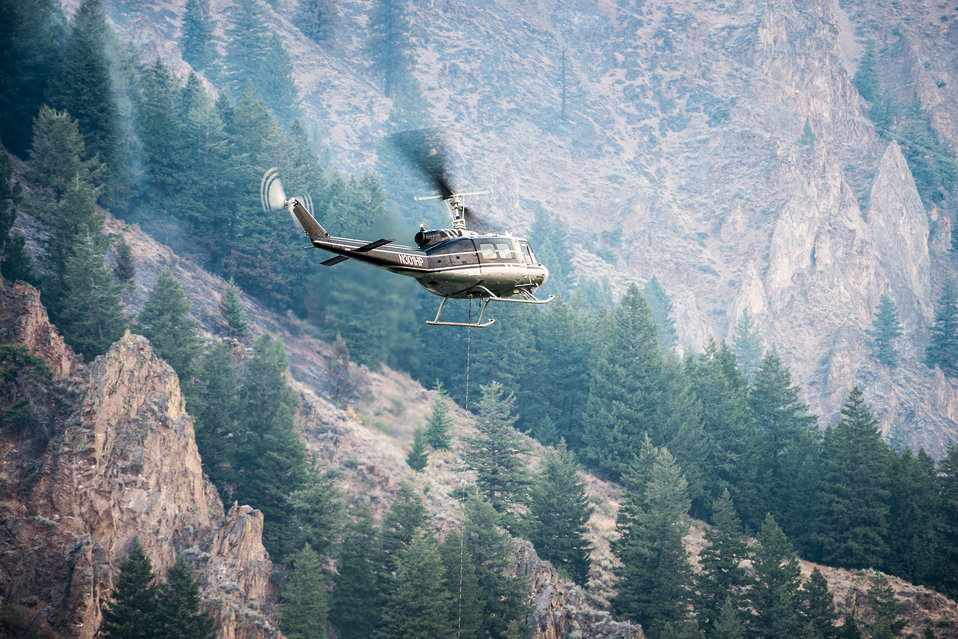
A Bell UH-1H helicopter performs water drops on fires, on the Carbonate Ridge, rising behind the Wood River, during Beaver Creek Fire, west of Hailey, ID, on Monday, Aug 19, 2013.